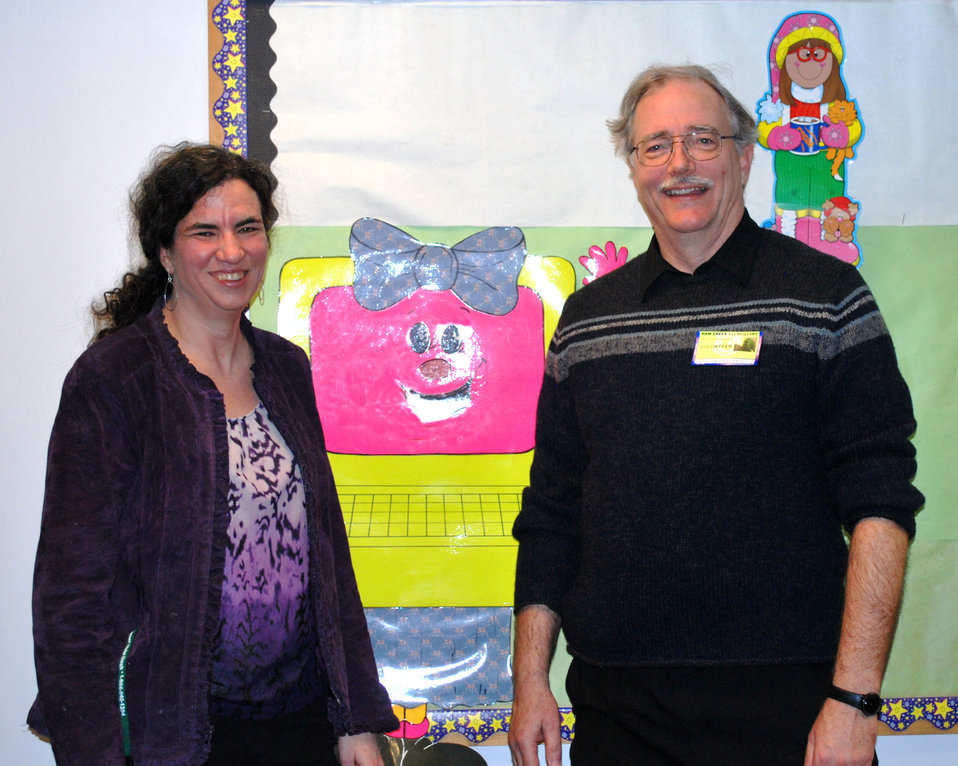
ScienceClub

Drs. Rebecca Efroymson and Bill Hargrove held a recent science club meeting in Haw Creek Elementary School’s computer lab.